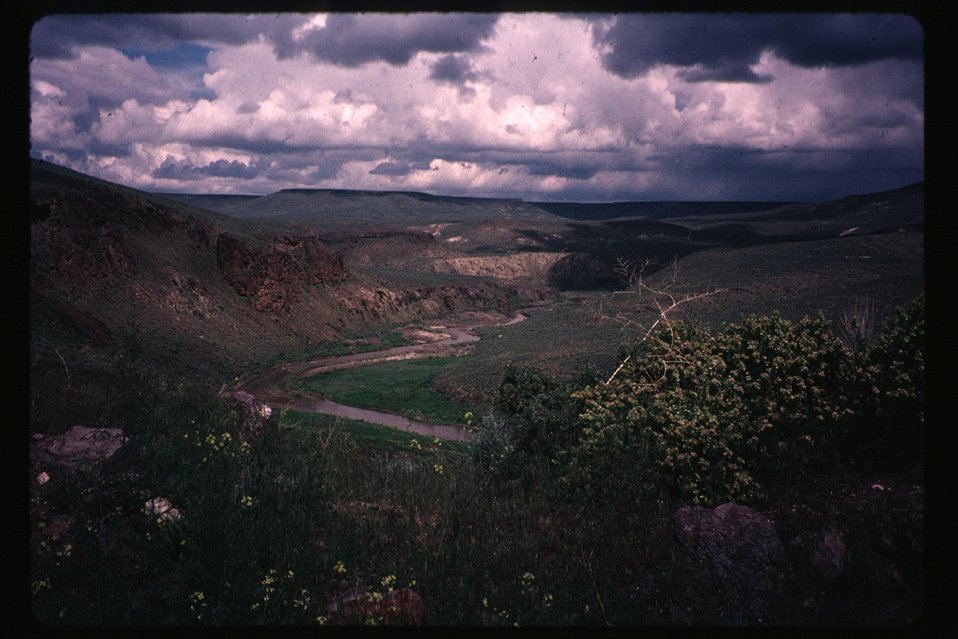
Owyhee River Rangeland Four Rivers Field Office LSRD Lower Snake River District